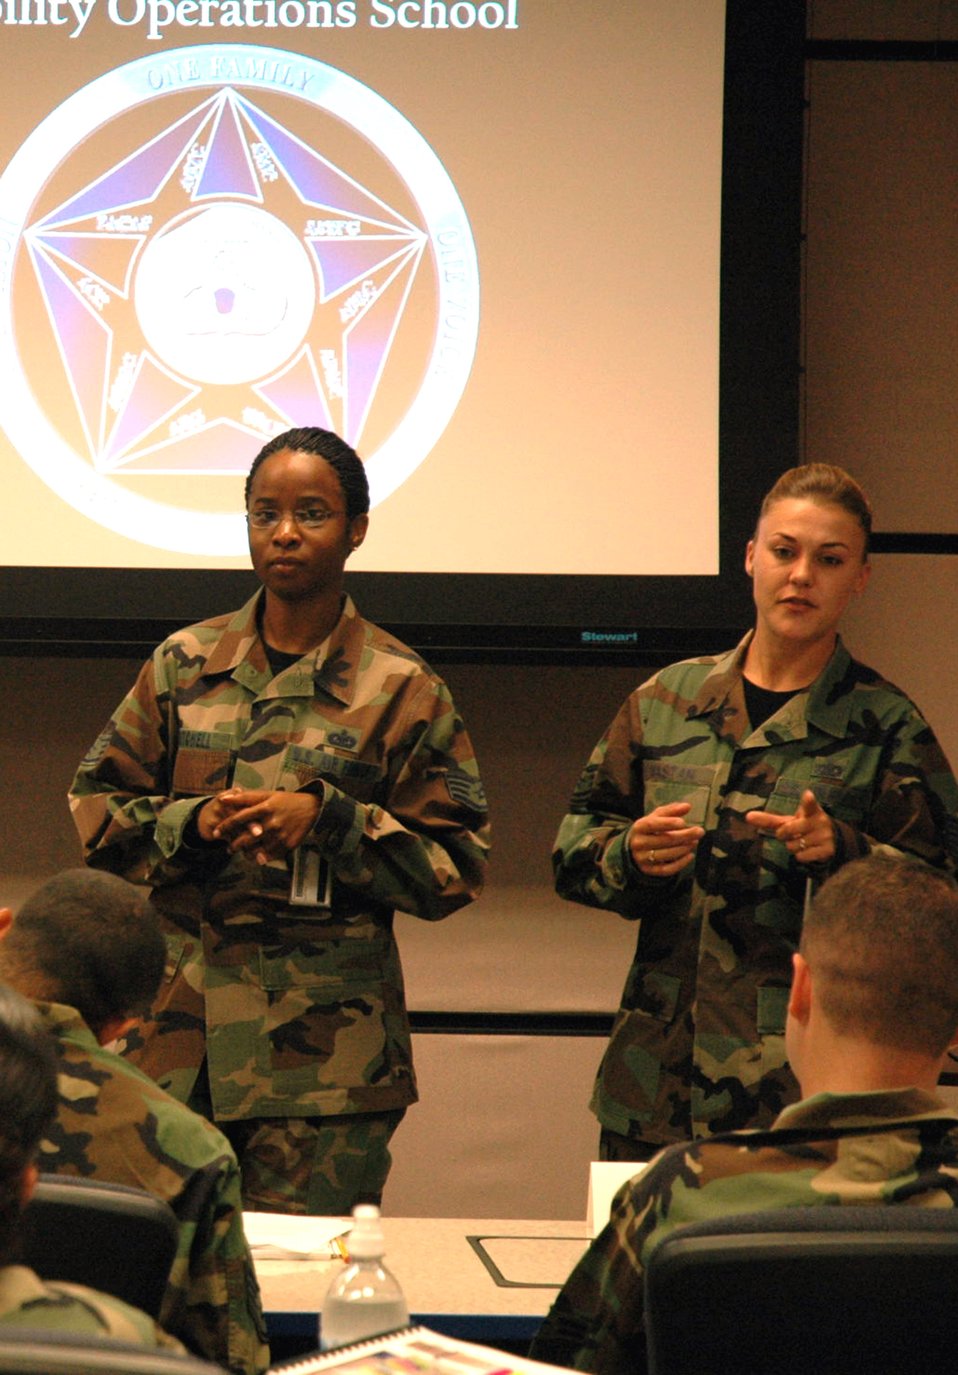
Aviation resource Airmen train for future success

Staff Sgt. Khadejah Mitchell and Tech. Sgt. Jennifer Mastan, both aviation resource management instructors for the U.S. Air Force Expeditionary Center's Mobility Operations School, begin a new class at the USAF EC on Fort Dix, N.J., recently.